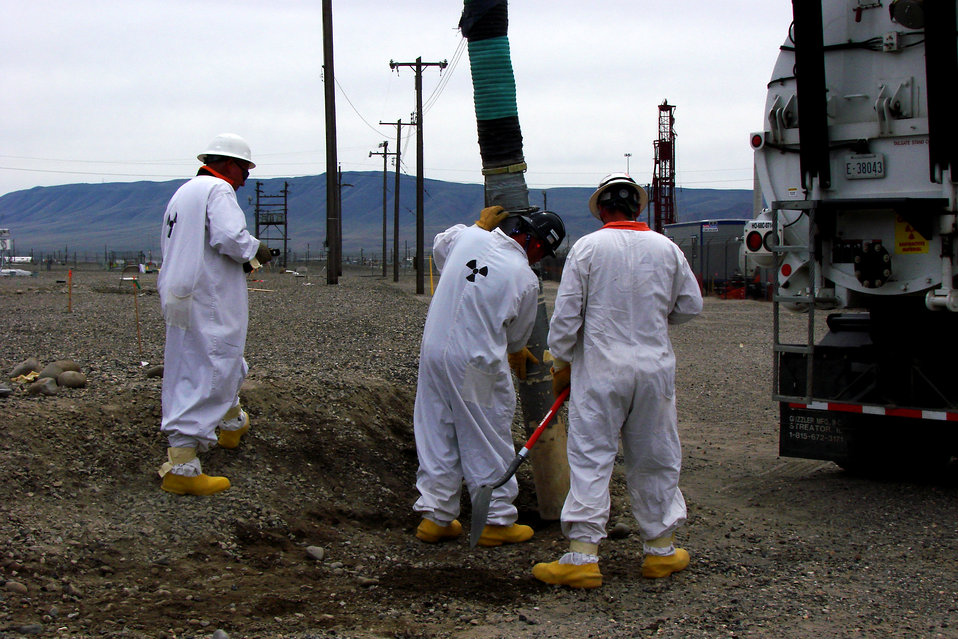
Interim Moisture Barrier

Workers begin excavation for a new Recovery-Act-funded interim moisture barrier at Hanford’s TY Farm. The barrier is designed to act as a protective shield and prevent rainwater from seeping into the soil and pushing leaked radioactive and chemical waste deeper into the ground. The $4.8 million project is funded by the Recovery Act.